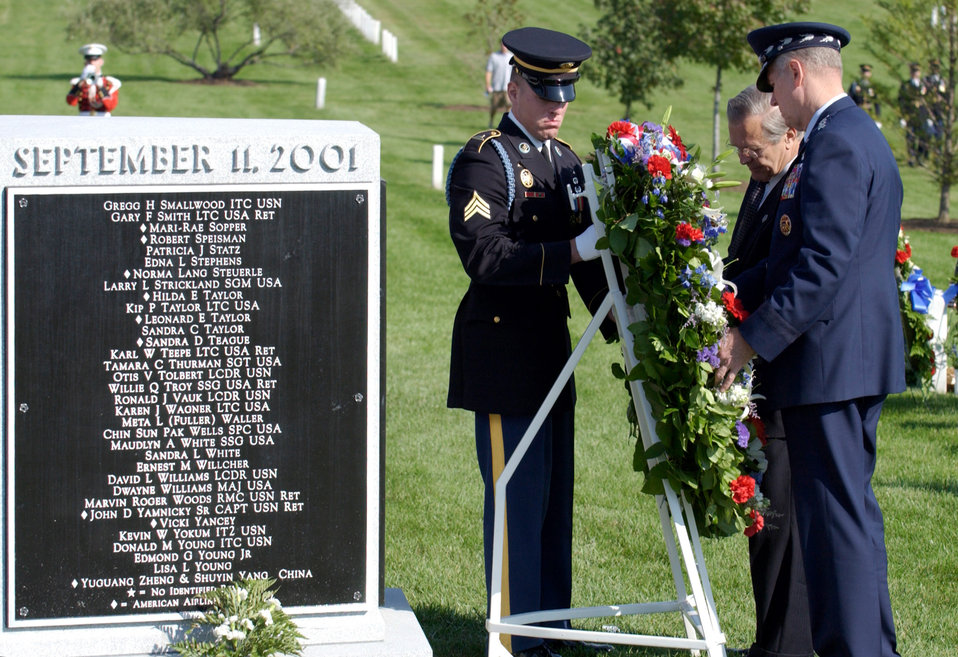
9-11: The Air Force remembers

WASHINGTON -- Joint Chiefs of Staff chairman Gen. Richard B. Myers (right) and Secretary of Defense Donald H. Rumsfeld (center) lay a wreath in honor of the victims of the terrorist attack on the Pentagon during a memorial service at Arlington National Cemetery on Sept. 11, 2003. Of the 184 people who died at the Pentagon, 64 are buried in the cemetery.